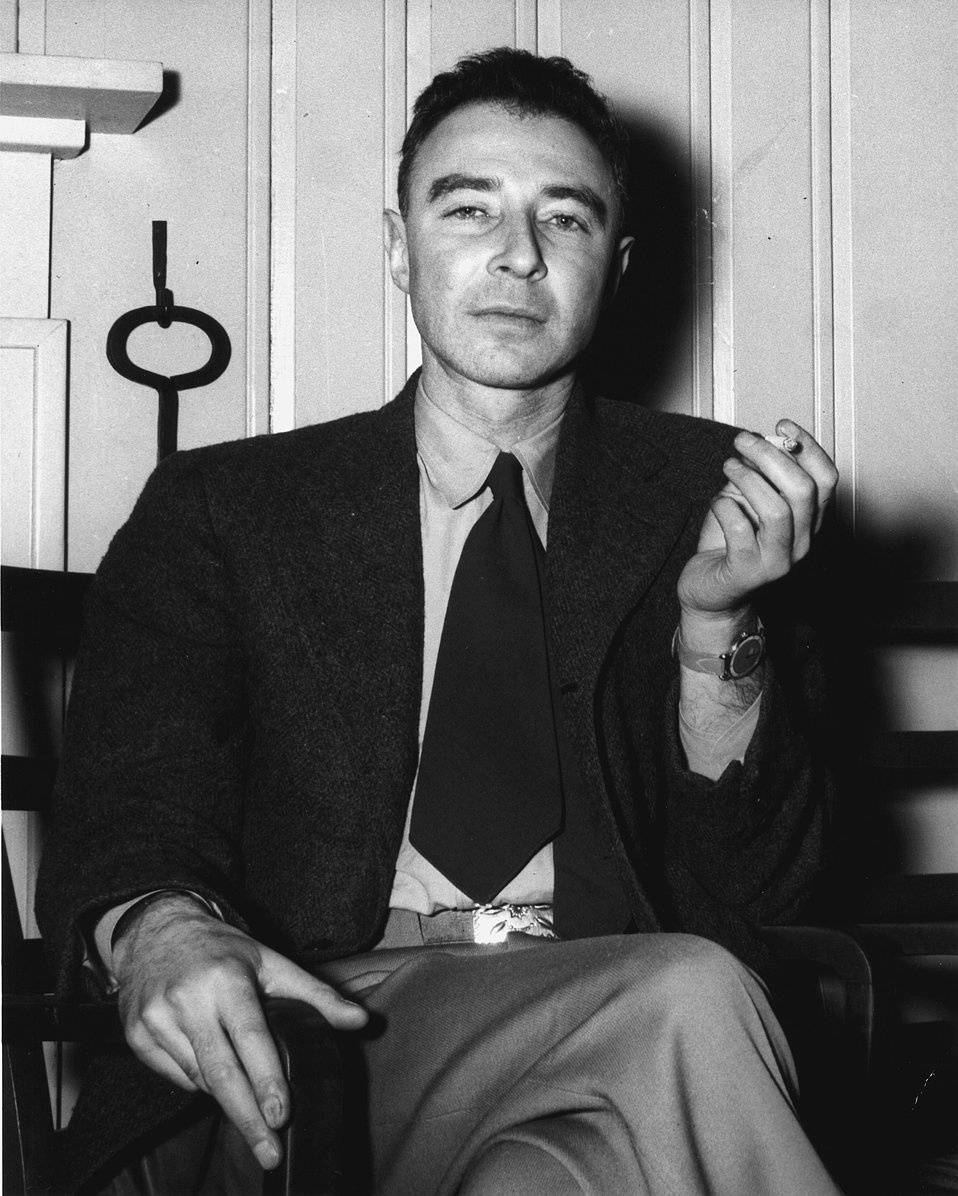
Oppenheimer at the Guest Lodge, Oak Ridge. c. 1946